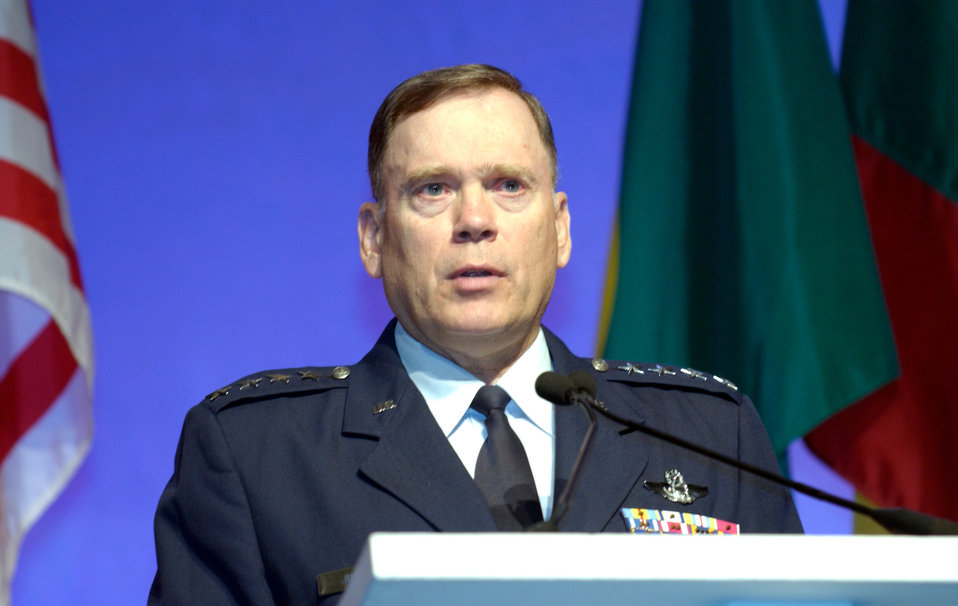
AFA Convention

WASHINGTON -- The Air Force chief of staff, Gen. John P. Jumper, gives his remarks during the opening ceremony of the Air Force Association's annual convention in Washington, D.C., on Sept. 15. In the audience are more than 90 international air chiefs who are attending the Global Air Chief's Conference which is running in conjunction with the convention.